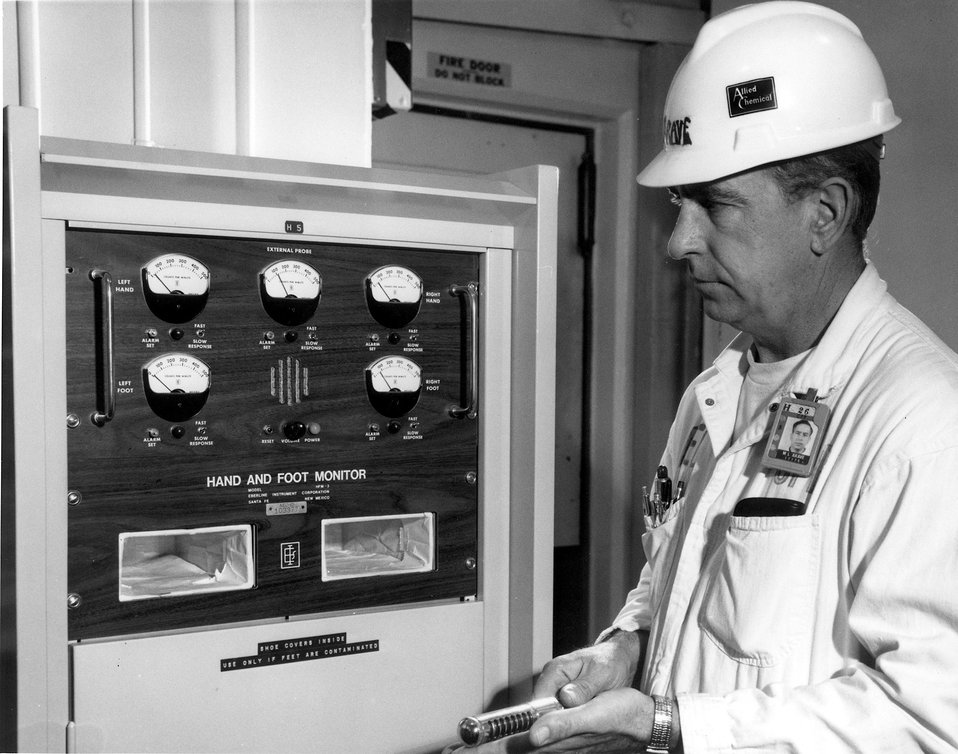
View of the top portion of a hand and foot radiation monitor. Circa 1974.